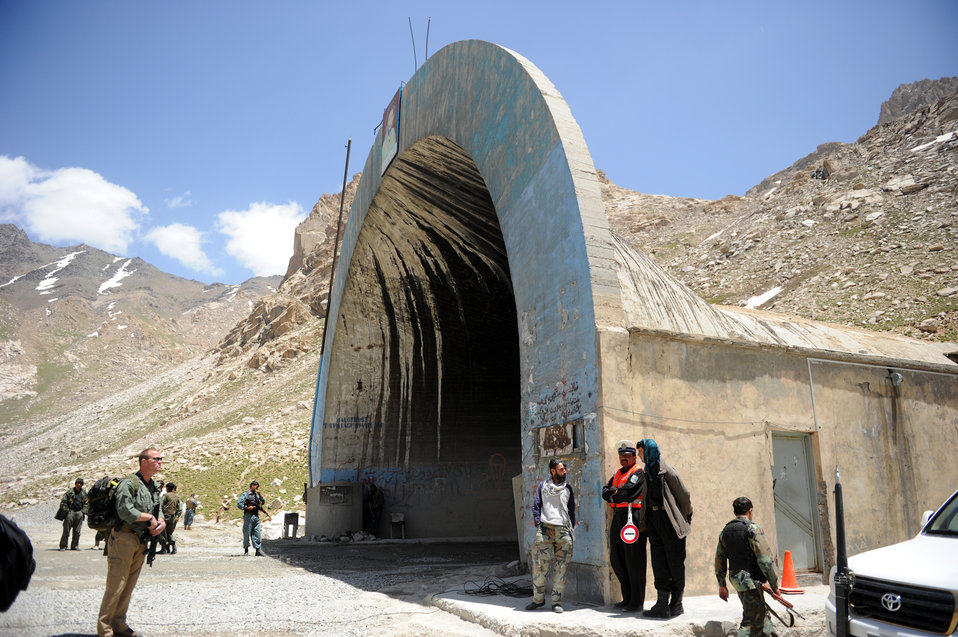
The North entrance to the Salang Tunnel on the border of Parwan and Baghlan Provinces, Afghanistan, on Wednesday, June 15, 2011. (S.K.Vemmer/Department of State)